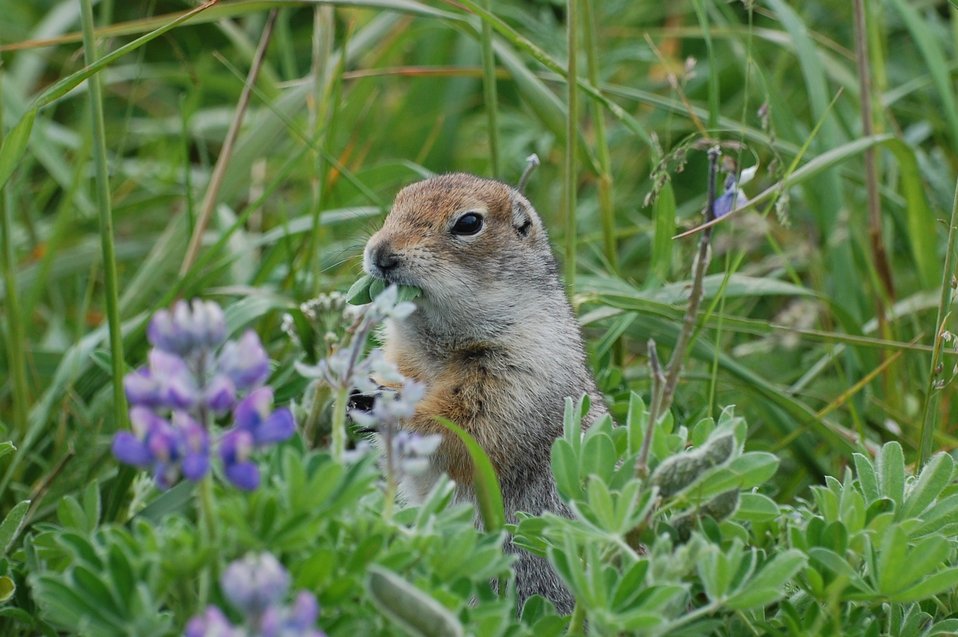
Arctic Ground Squirrel

Feeding on lupine seeds, Izembek National Wildlife Refuge